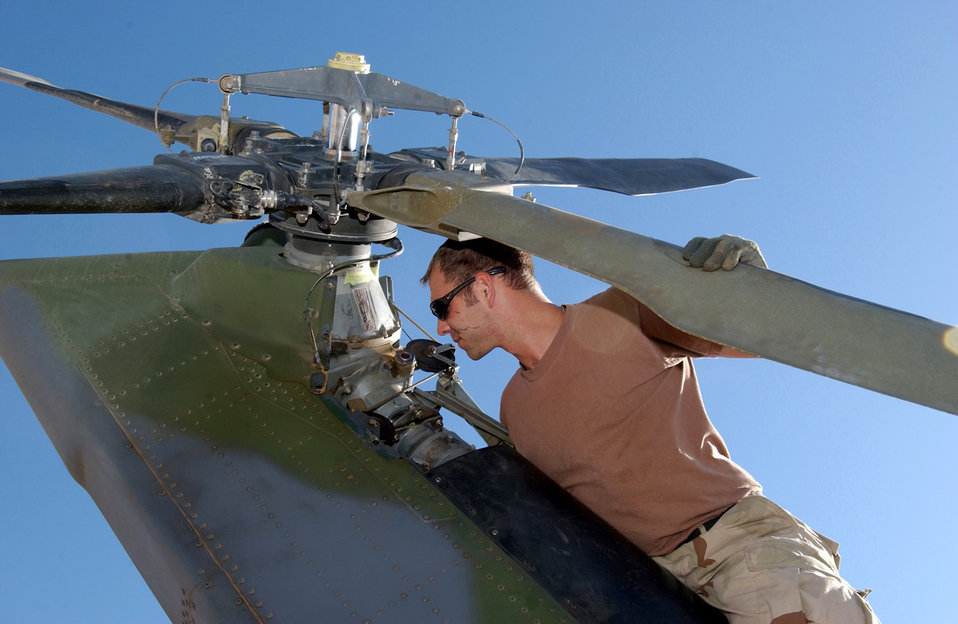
Combat rescue

BALAD AIR BASE, Iraq -- Staff Sgt. Scott Dickover inspects an HH-60 Pave Hawk helicopter. Sergeant Dickover is a crew chief with the 64th Expeditionary Rescue Squadron here, and he is deployed from the 41st Helicopter Maintenance Unit at Moody Air Force Base, Ga.